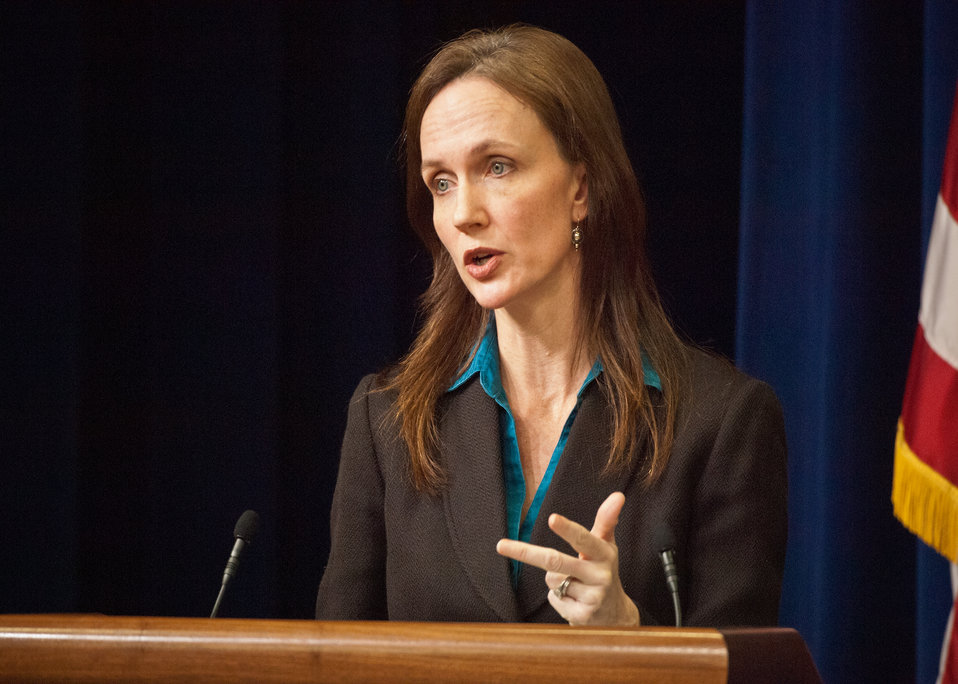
Dr. Elisabeth Hagen, Undersecretary, Food Safety discussed food safety issues at the 11th Annual Meeting of State Agriculture and Rural Leaders at the Eisenhower Executive Office Building in Washington, D.C., Friday, January 6, 2012.